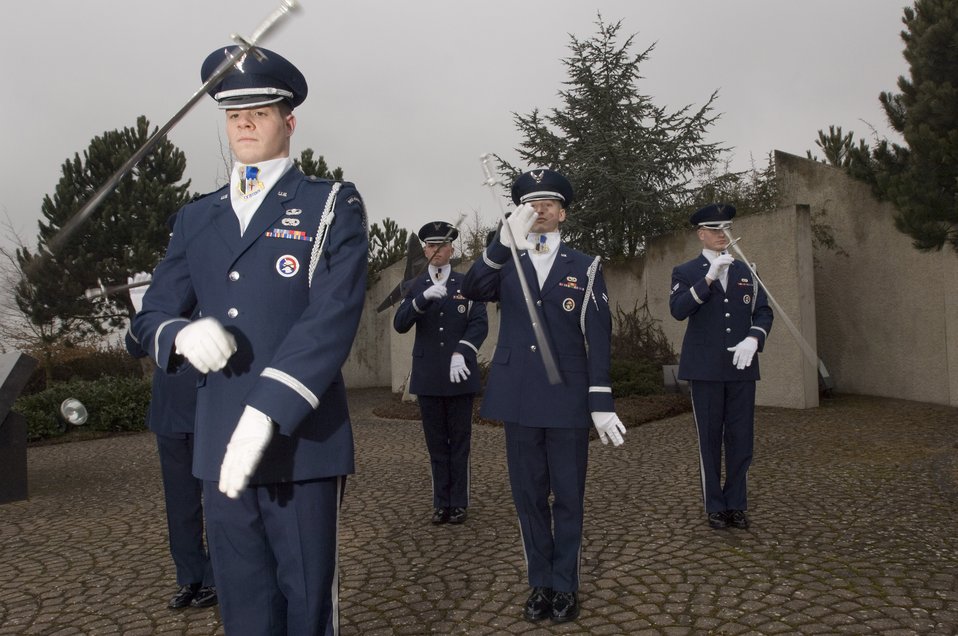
Airmen toss sabers to honor comrades

First Lt. Brian Cooper practices with fellow Eifel Sabre Drill Team members, left to right, Airmen 1st Class Jacob McCarty and Dallas Smith and Senior Airman Josh Van Derbeck at Spangdahlem Air Base, Germany, on Tuesday, March 21, 2006. Lieutenant Cooper is a maintenance flight commander for the 52nd Equipment Maintenance Squadron. Airman McCarty is a quality assurance evaluator with the 52nd Civil Engineer Squadron. Airman Smith is a computer networking cryptographic switching system journeyman with the 606th Air Control Squadron. Airman Van Derbeck is an avionics specialist with the 22nd Aircraft Maintenance Unit.